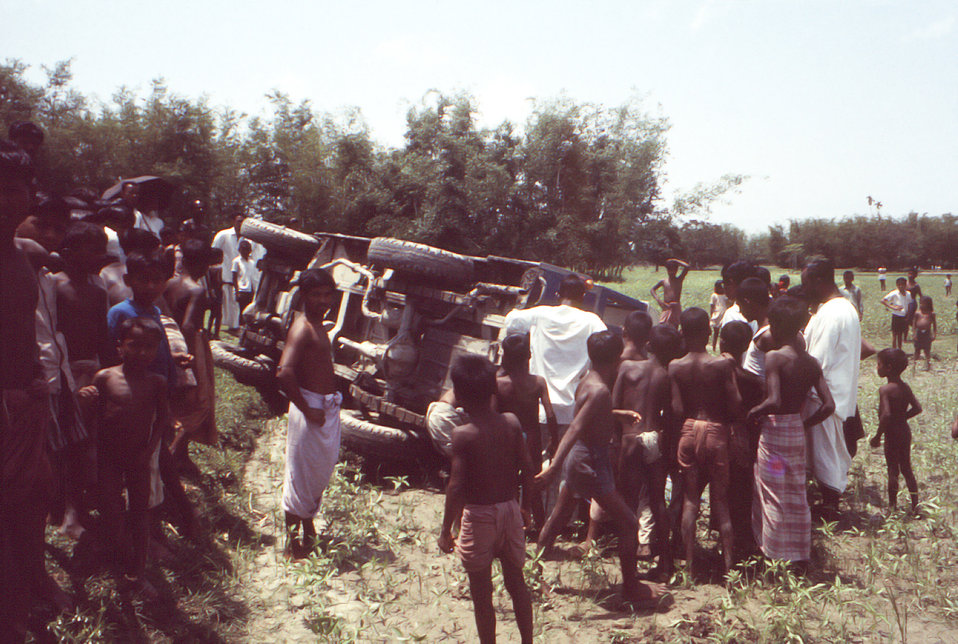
Photographed sometime in the early 1970s, during the worldwide smallpox eradication campaign, this image depicted an overturned Landrover, which had toppled while driving between rice paddies somewhere in the country of Bangladesh.The Disease